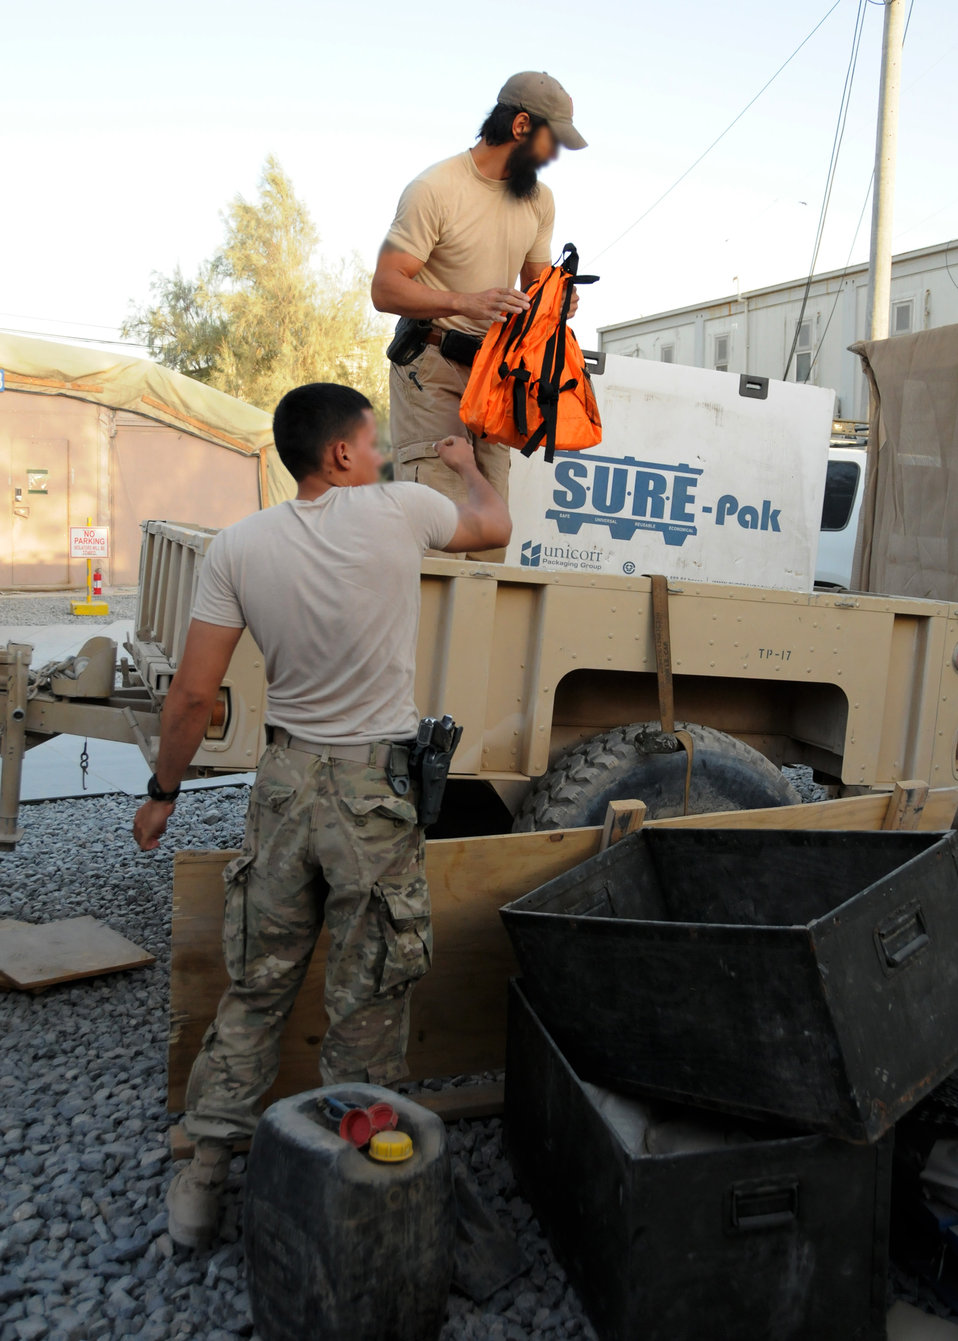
Humanitarian efforts

Air Force service members from an expeditionary unit load a large cargo container of more than 140 backpacks filled with school supplies for a humanitarian mission, here in Kandahar Province, Afghanistan, June 18, 2012. The humanitarian mission delivered school supplies for Afghan teachers and students at a local school. The supplies were donations collected stateside by the project lead's family, friends, and church.